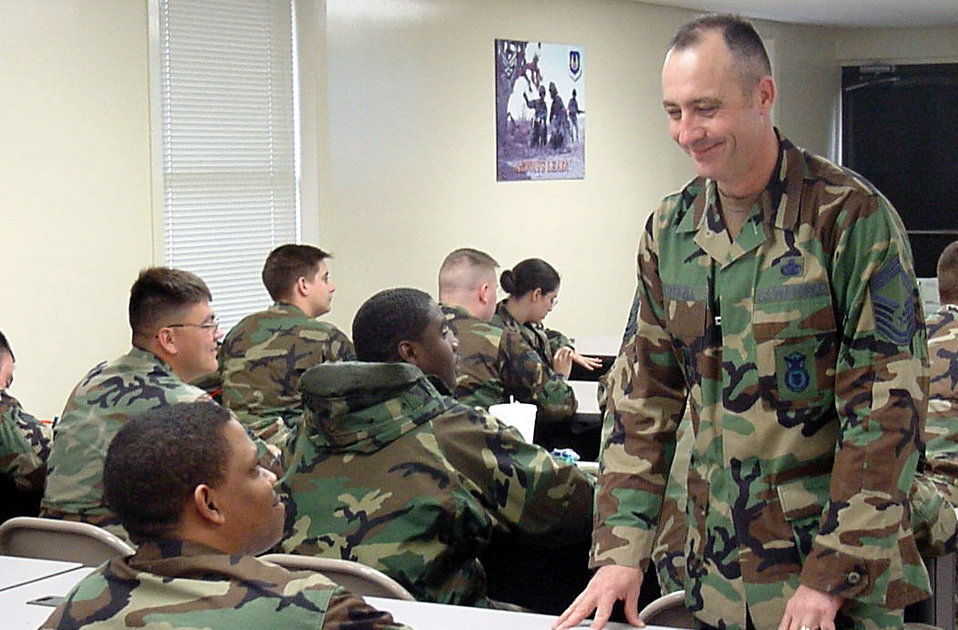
Popwell

EGLIN AIR FORCE BASE, Fla -- Senior Master Sgt. David Popwell (right) has earned the Noncommissioned Officer Association's Vanguard Award for heroism for his
life-saving actions following a car crash on a Florida highway. Popwell is the superintendent for the 96th Ground Combat Training Squadron here.